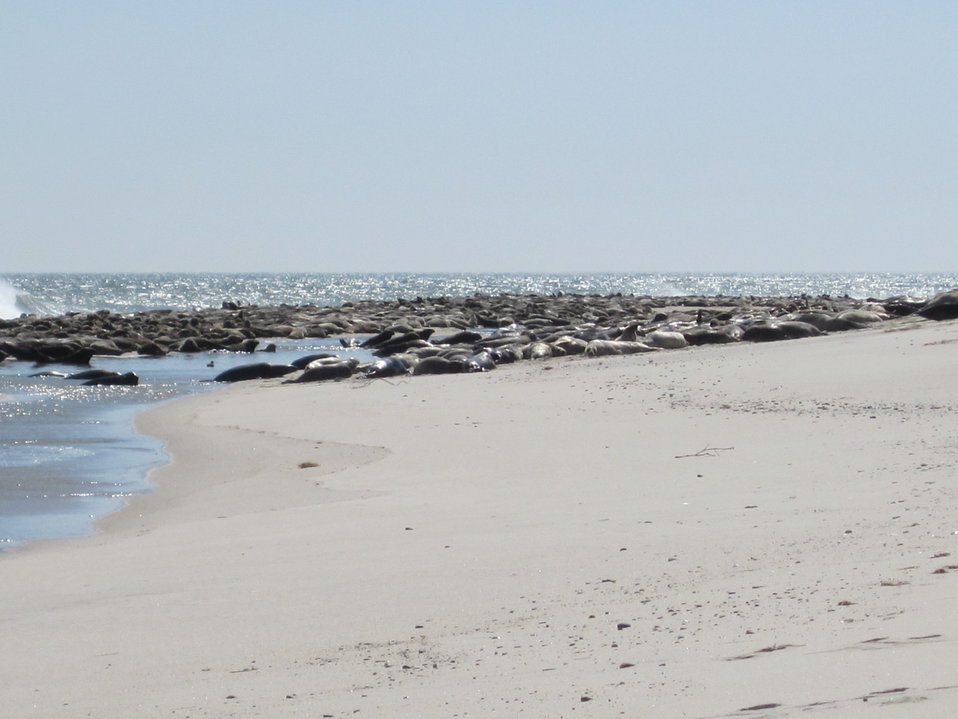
Seals on South Monomoy Island

Seals gather on South Monomoy Island, a few hundred yards from the lighthouse.

Credit: Keith Shannon/USFWS

Monomoy National Wildlife Refuge is part of the Eastern Massachusetts National Wildlife Refuge Complex.